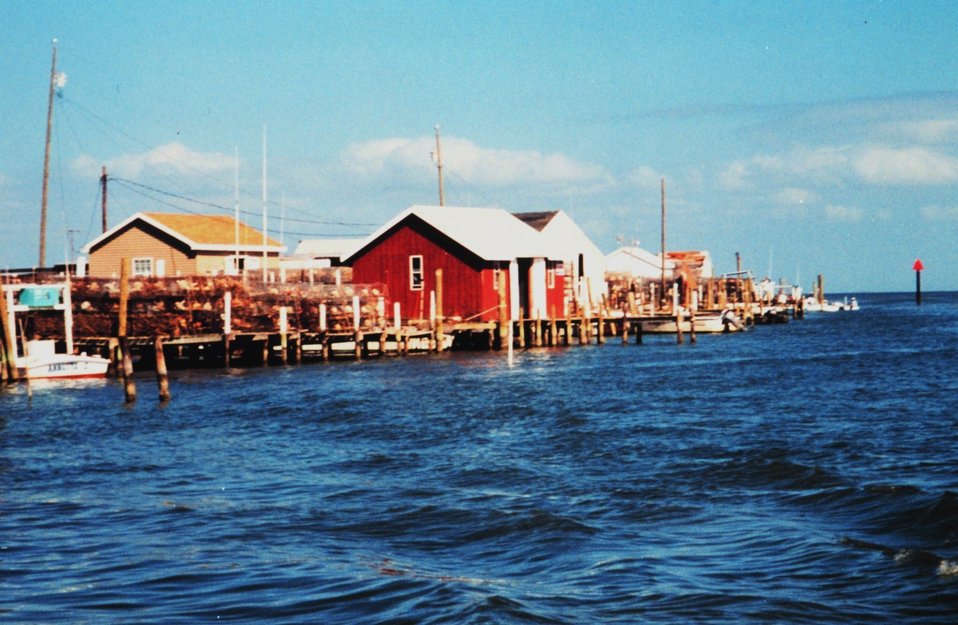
Crab pots stacked up along the docks at Tangier Island.